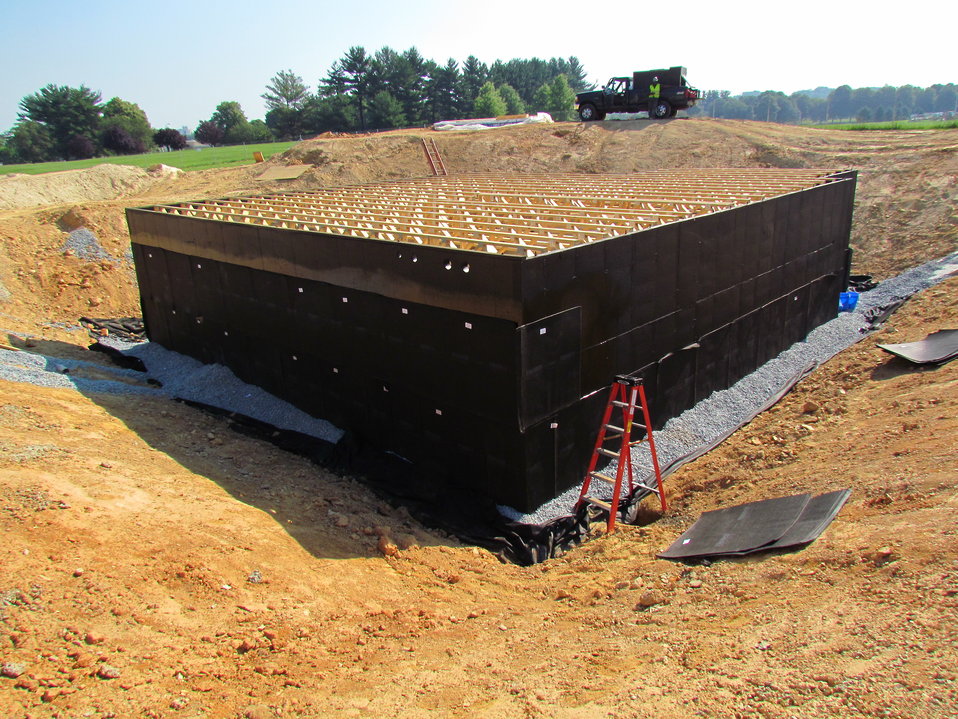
Net-Zero Energy Residential Test Facility - Construction photo showing basement walls of facility, with waterproofing applied, and open web floor trusses in place.